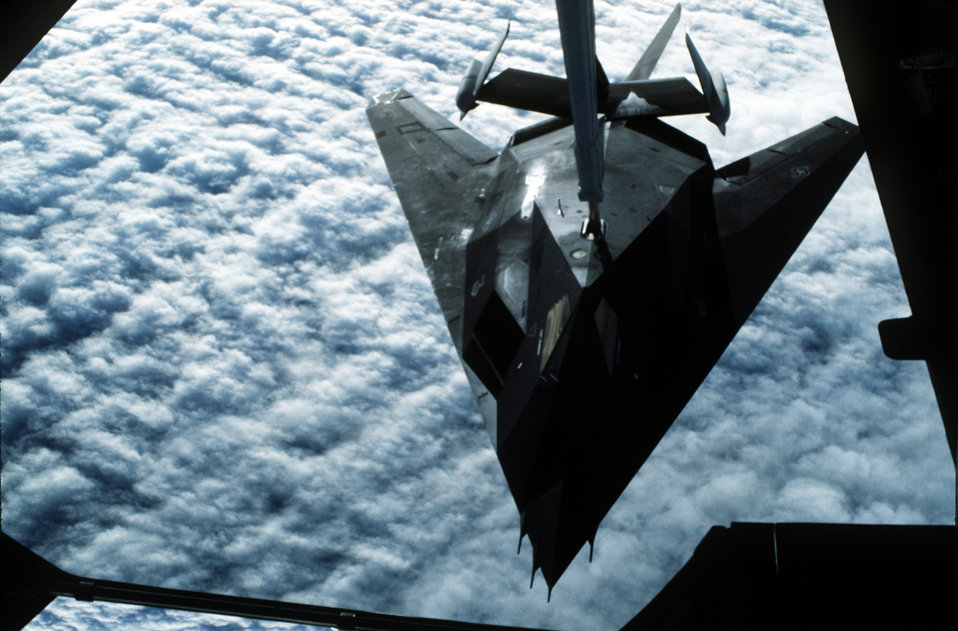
F-117A stealth fighter

1990's -- A 37th Tactical Fighter Wing F-117A stealth fighter aircraft refuels from a 22nd Air Refueling Wing KC-10 Extender aircraft during Operation Desert Shield. The F-117A is en route to Saudi Arabia.